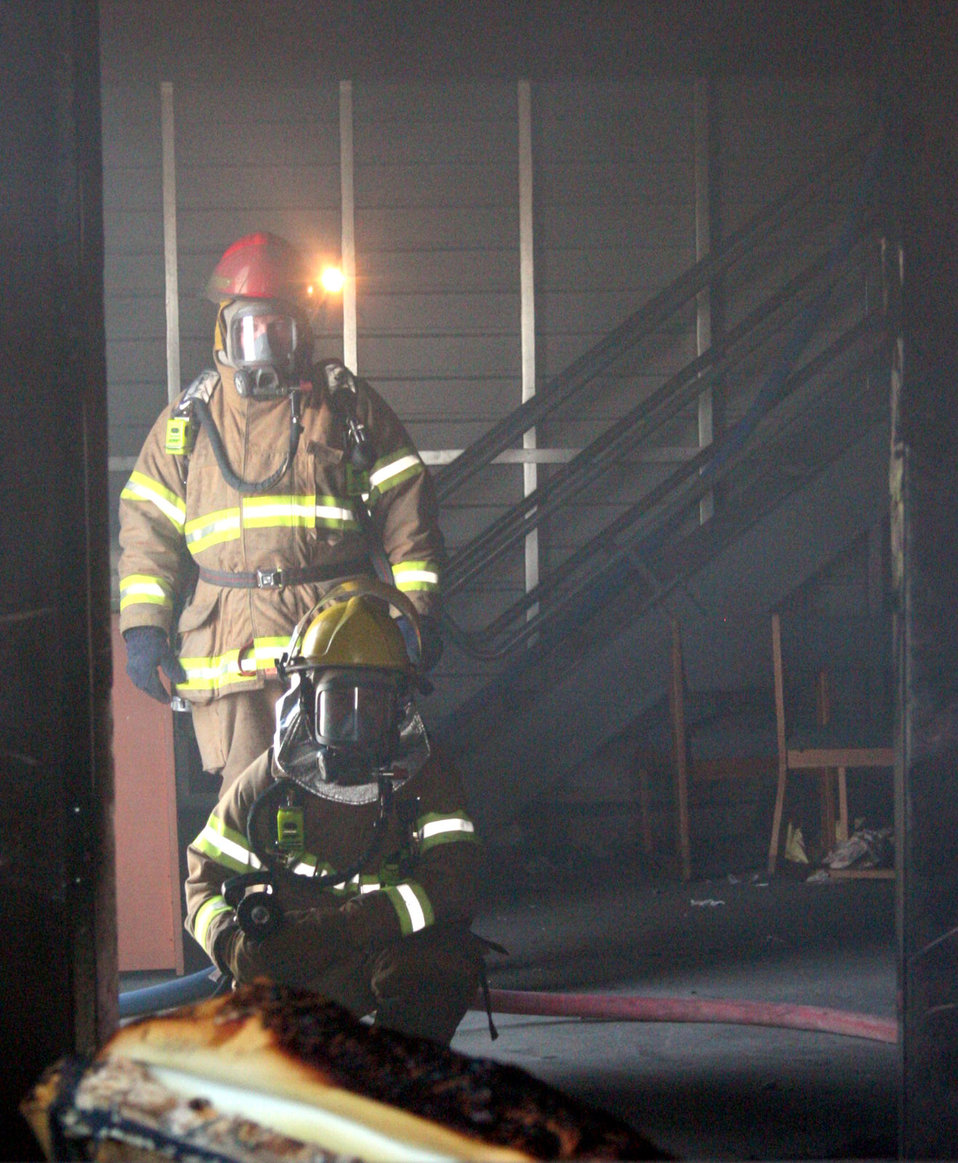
Firefighters: more than fighting blazes

MOUNTAIN HOME AIR FORCE BASE, Idaho -- Fire Chief Cliff Lewis monitors Airman Andrew Stephens from behind before he enters a room to fight a fire during a training exercise. They are assigned to the 366th Civil Engineer Squadron's fire protection flight.